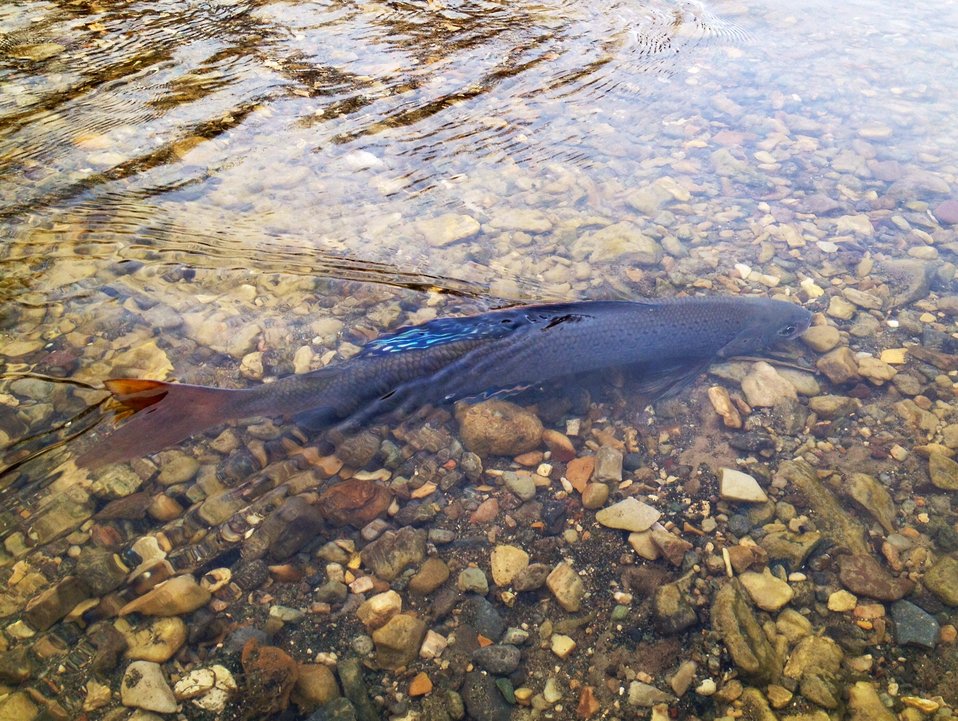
Moving on up.

A male Arctic Grayling, a State Species of Special Concern, migrates upstream in Red Rock Creek, Montana.

The Fish and Aquatic Conservation Division of the US Fish and Wildlife Service has been providing support to Red Rock Lakes National Wildlife Refuge with monitoring this unique population of Arctic Grayling for nearly 2 decades.